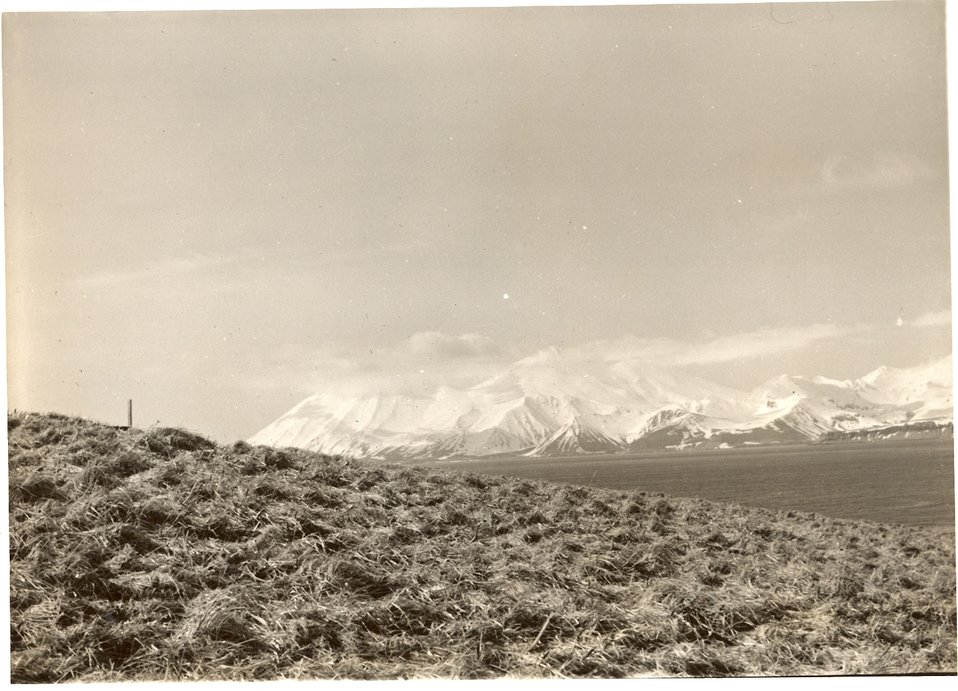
Coastal view.